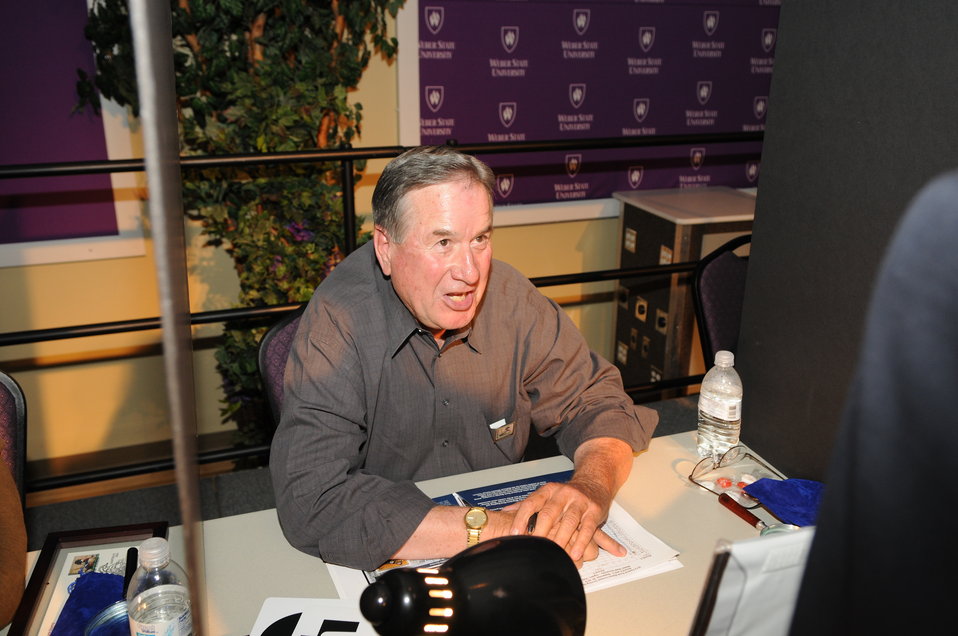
Judging

The U.S. Fish & Wildlife Service sponsored the 2012 Federal Duck Stamp Art Contest September 28 and 29 in Ogden, Utah, at Weber State University. A panel of five judges was responsible for choosing the art work used to design the 2013-2014 Migratory Bird Hunting and Conservation Stamp.